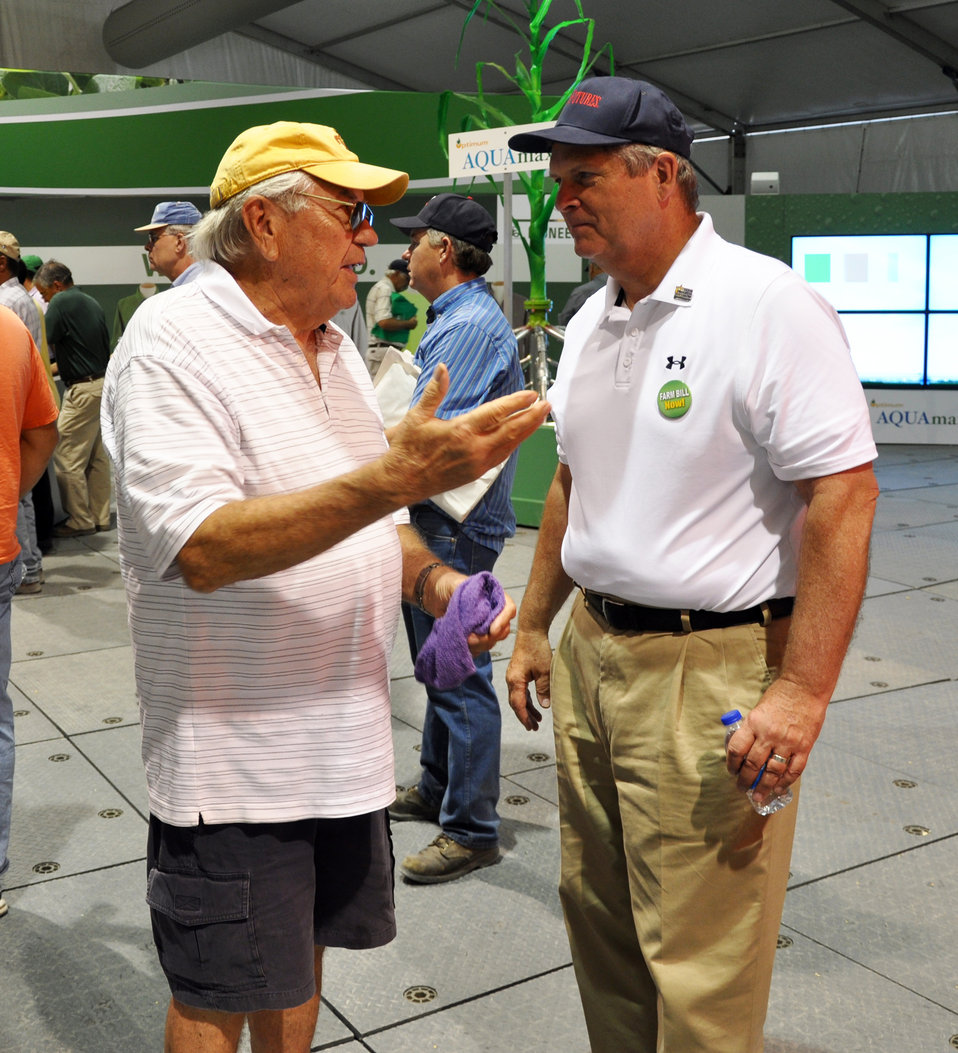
Agriculture Secretary Tom Vilsack visits with Gowrie, Iowa, farmer Dick Hubbard in the DuPont Pioneer tent during the 2012 Farm Progress Show in Boone, Iowa, on Aug. 30, 2012.